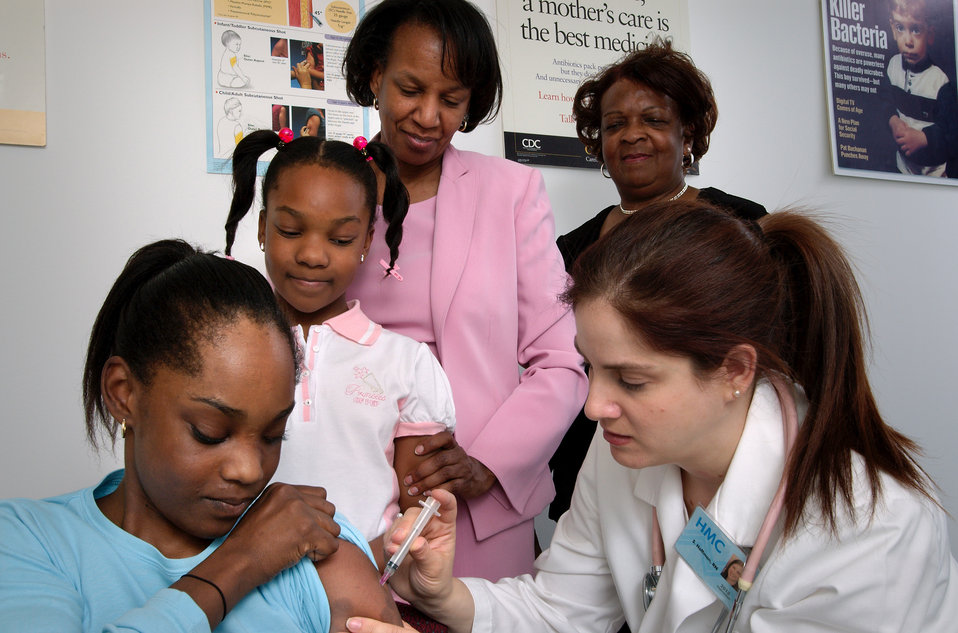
This 2006 photograph showed a nurse in the process of administering an intramuscular vaccination to an adolescent girl whose sister, mother, and grandmother watched from the background. The nurse chose the shoulder muscle of the girl's left arm as the site of injection.